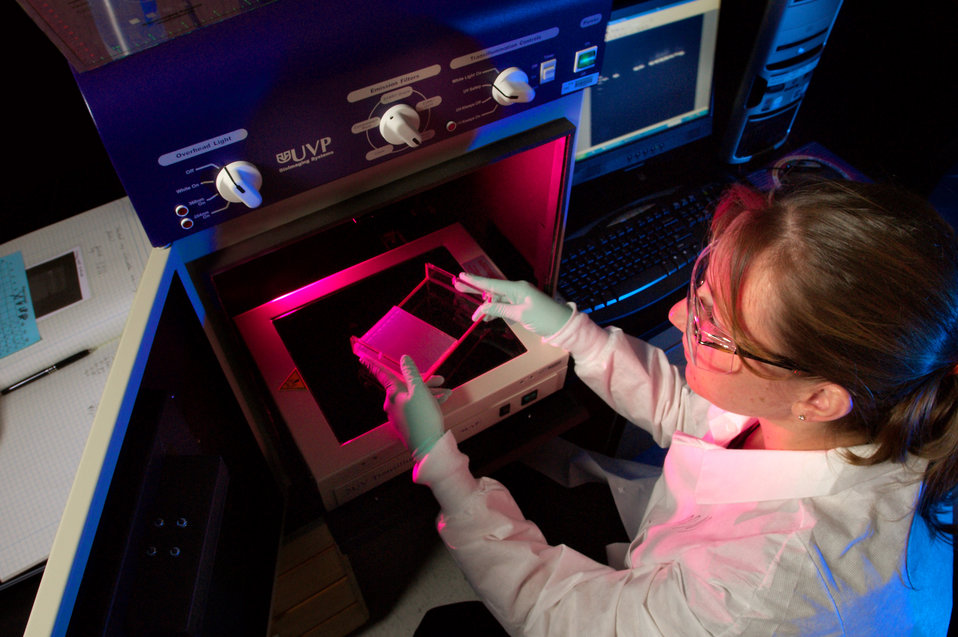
This 2007 photograph depicts CDC contractor Amanda McNulty as she was using the UVP Imaging System in order to examine the results of a DNA gel electrophoresis plate. Ms. McNulty is investigating drug resistance to antiretroviral medications in HIV infected persons from PEPFAR (President's Emergency Plan for AIDS Relief) countries. Amanda is a National Center for HIV/AIDS, Viral Hepatitis, STD, and TB Prevention (NCHHSTP) staff member, who works inside the center's Global AIDS Program's (GAP) International Laboratory Branch (ILB).